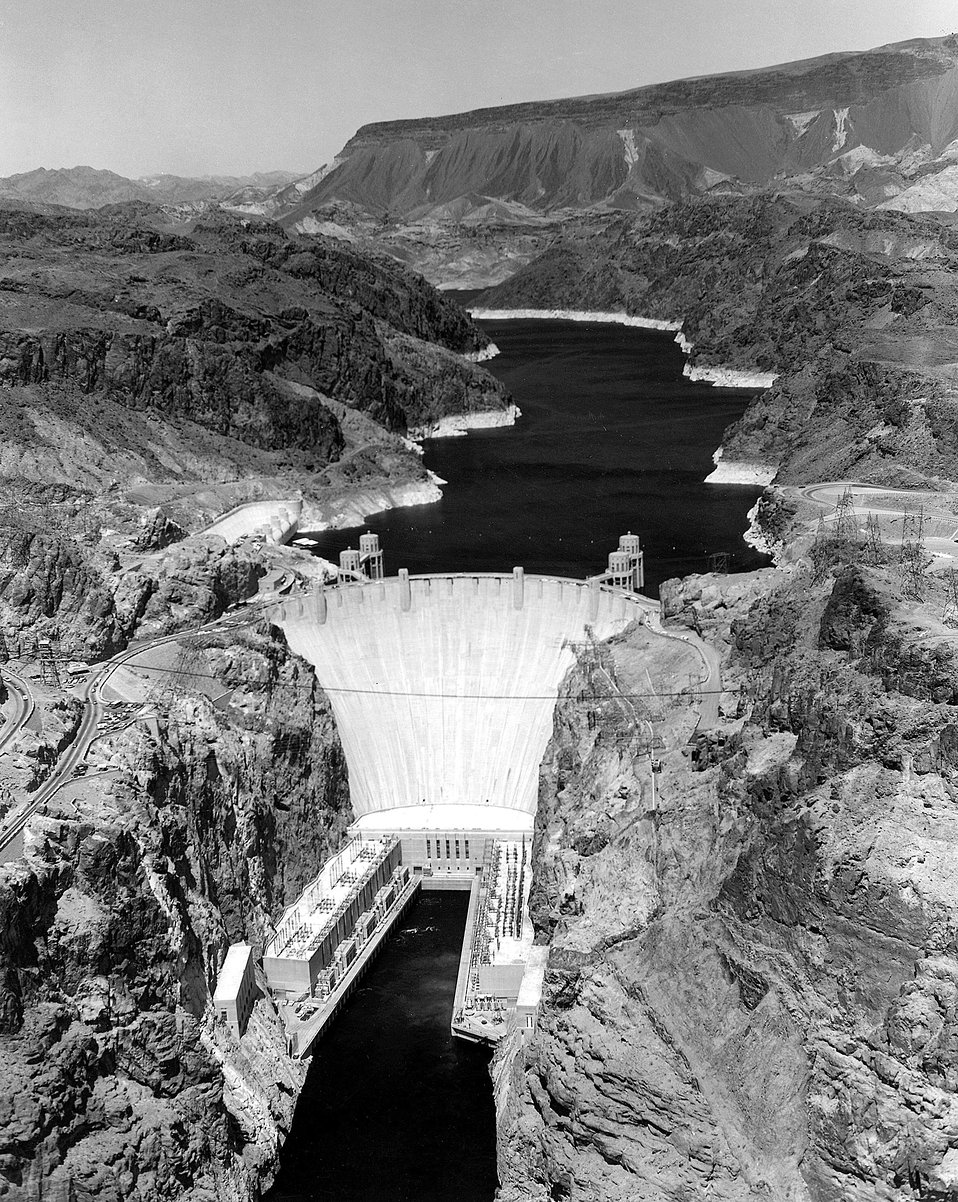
Hoover Dam and Lake Mead -- Boulder Canyon Project -- Ariz. - Nev. Aerial view of Hoover Dam and Lake Mead. c. 1970